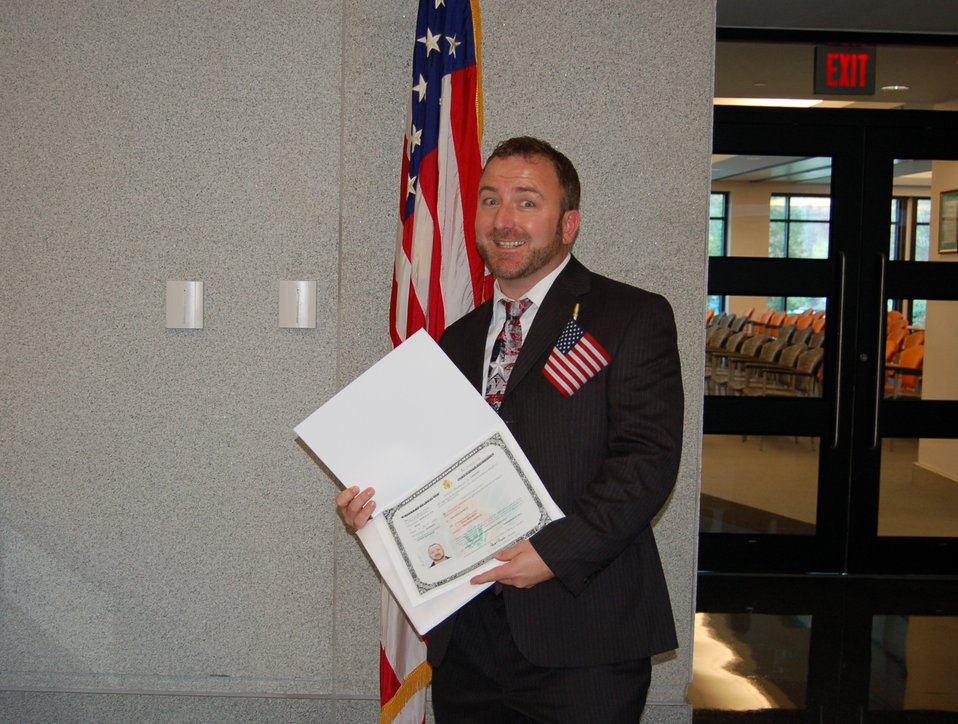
New Citizens